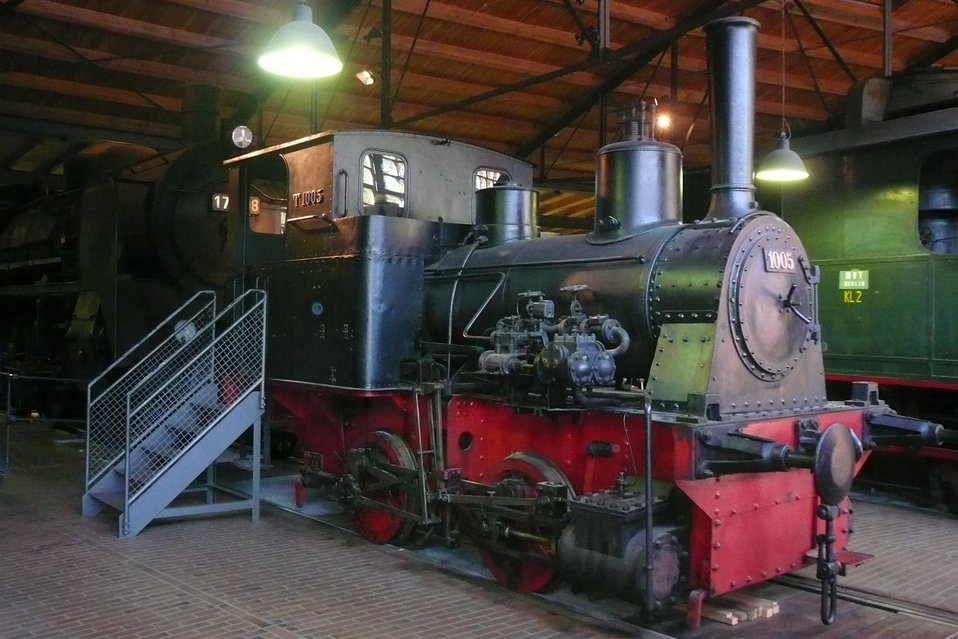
Deutsch: württembergische T als T 1005 im Deutschen Technikmuseum Berlin, die ab 1921 im Fürstlich Hohenzollerischen Hüttenwerk Laucherthal eingesetzt wurde